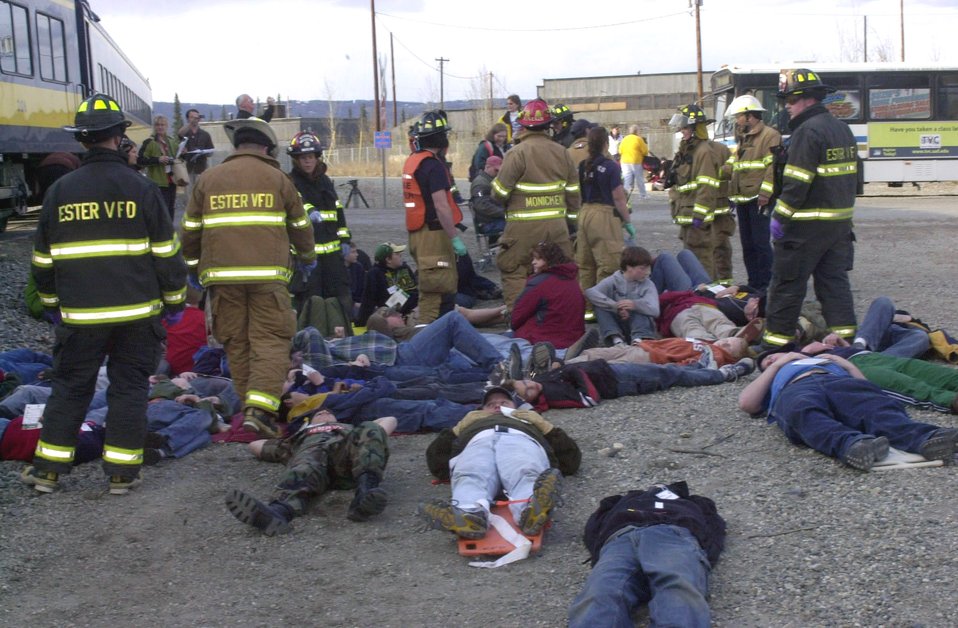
Government, local agencies test emergency coordination

Rescue workers from fire departments monitor and evacuate simulated casualties of a train collision May 8 as part of Alaska Shield/Northern Edge 2007 in Fairbanks, Alaska. The exercises, which are scheduled to run from May 7 to 18, test military and civilian authorities throughout Alaska on all aspects of emergency preparedness as they respond to a variety of scenarios including natural disasters and major accidents.